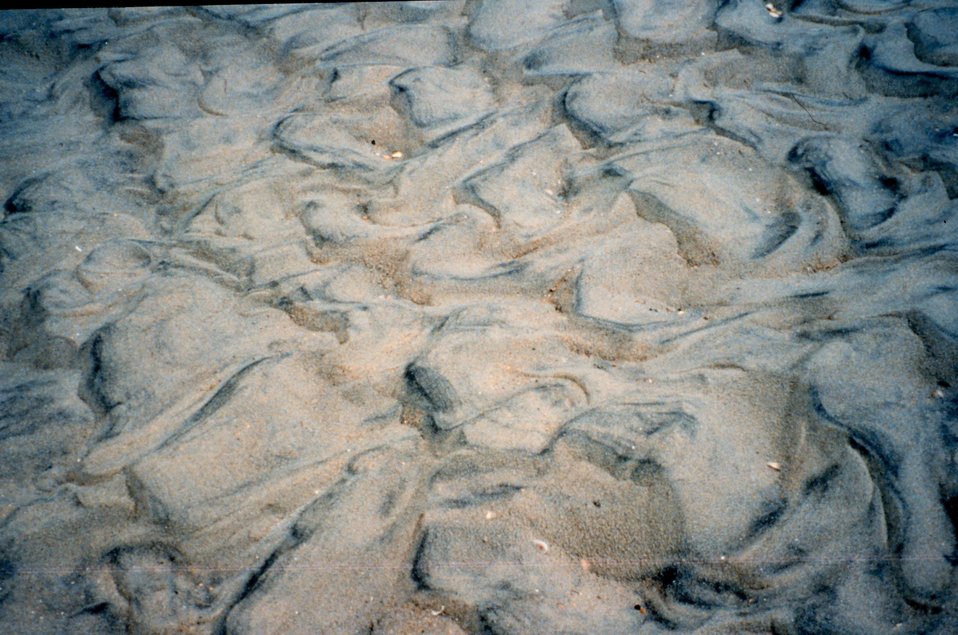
Low tide along South Carolina shoreline showing current action